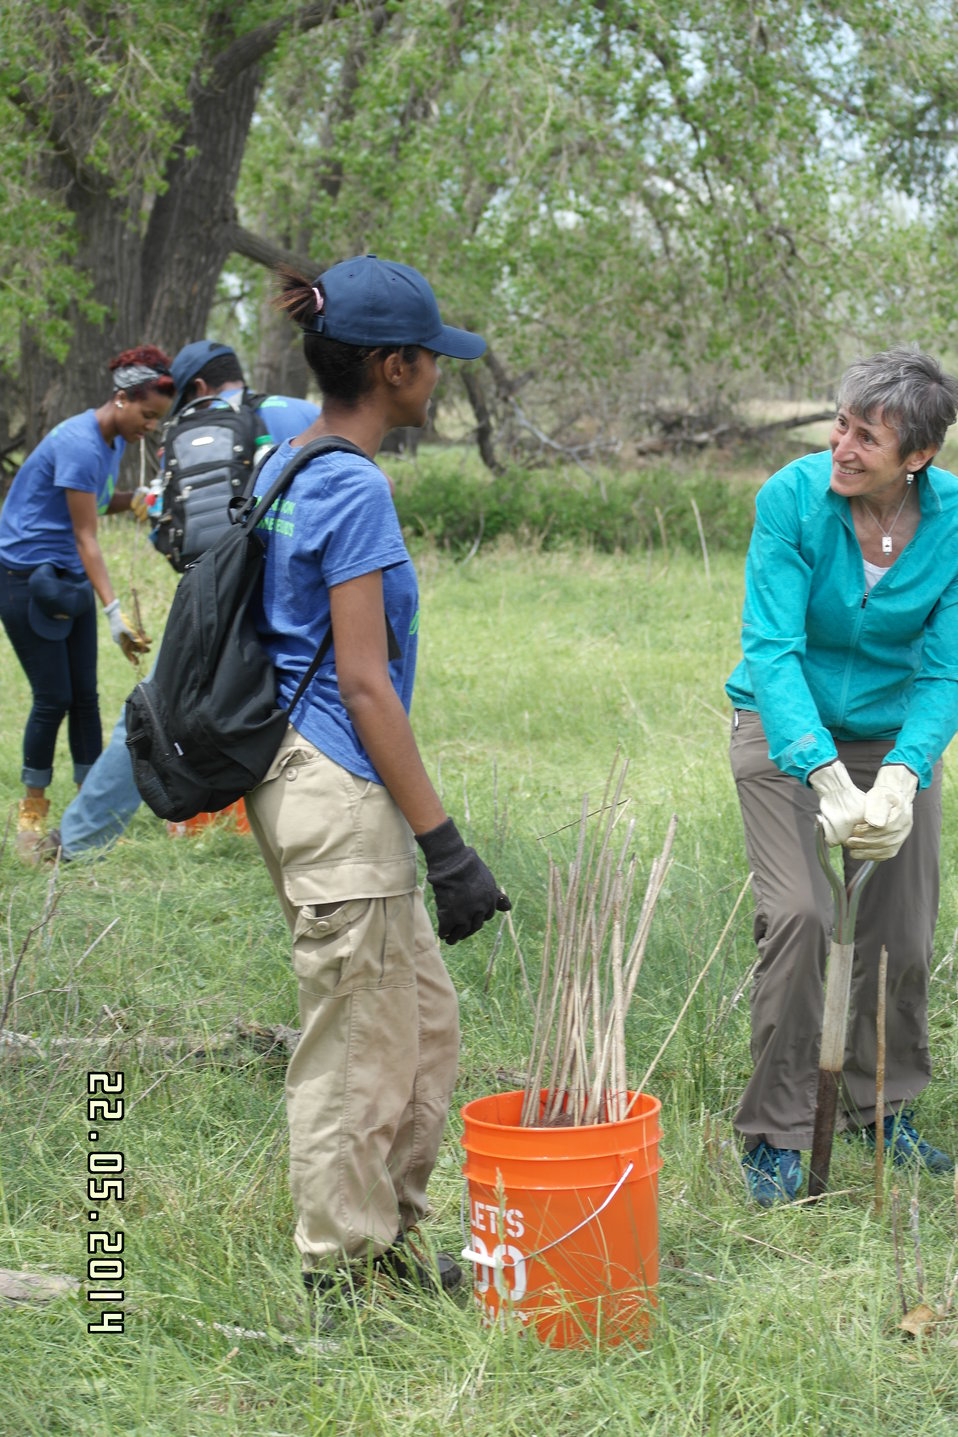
Secretary Jewell Announces $6.7 for Youth Conservation Job

Interior Secretary Sally Jewell helps local youth conservation groups plant cottonwood trees at Rocky Mountain Arsenal National Wildlife Refuge.